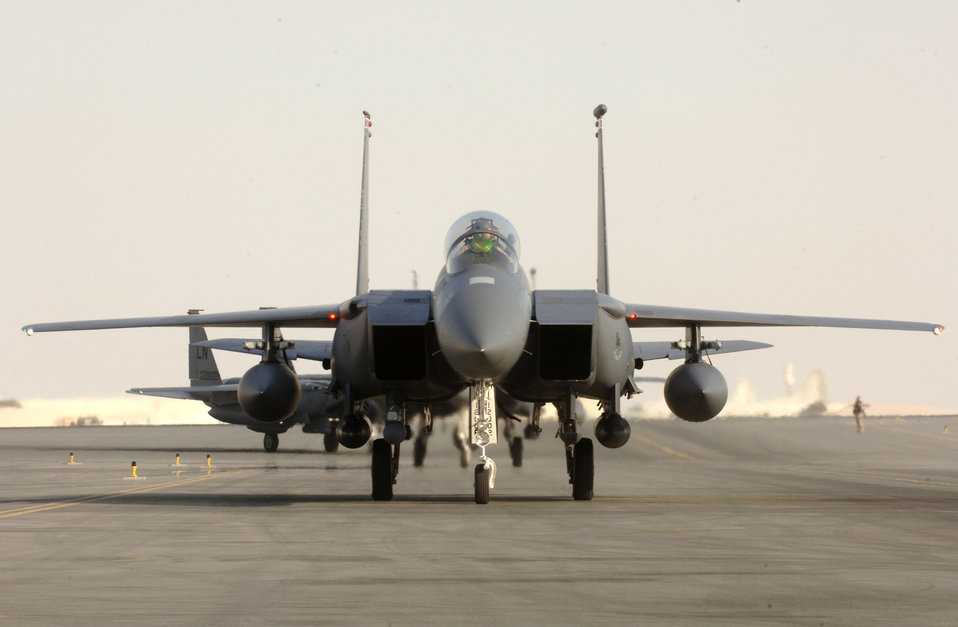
May 27 airpower summary

U.S. Air Force F-15E Strike Eagles taxi down the flightline at a base in Southwest Asia. F-15Es flew four out of the 43 close-air-support missions supporting Operation Enduring Freedom May 26.